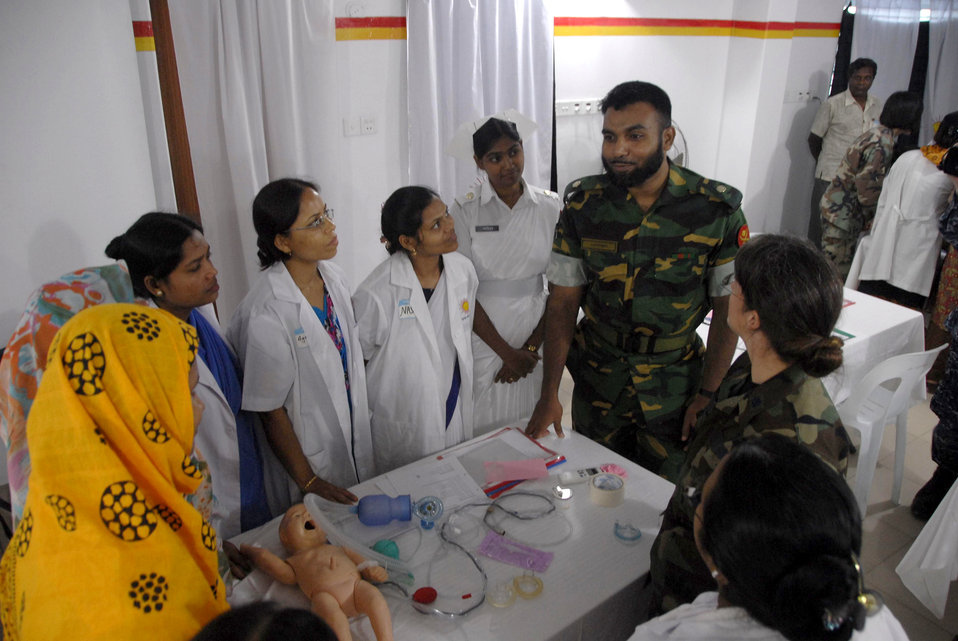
Neonatal care

Maj. Mofazzol Hossain, left, and Lt. Col. Lindy Winter discuss neonatal care with Bangladeshi health care providers during a subject matter expert exchange June 12, 2010, at the Smiling Sun Clinic in Jessore, Bangladesh. Operation Pacific Angel is a joint and combined humanitarian assistance operation conducted in the Pacific area of responsibility to support U.S. Pacific Command's capacity-building efforts. Maj. Hossain is a Bangladesh Army pediatrician, and Colonel Winter is the chief of neonatology at the U.S. Naval Hospital on Camp Lester in Okinawa, Japan.